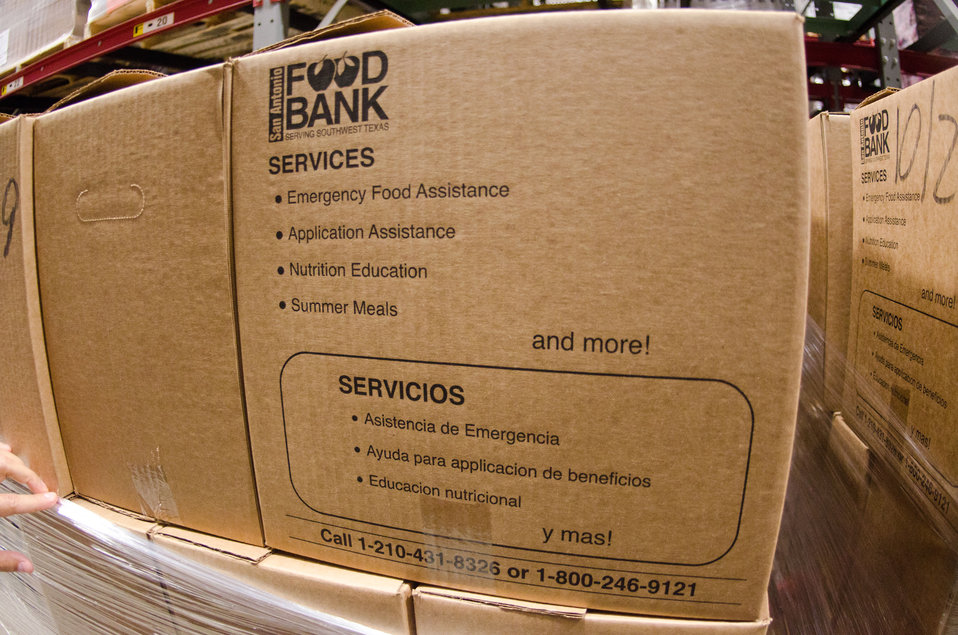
The United States Department of Agriculture donates commodities through programs such as The Emergency Food Assistance Program (TEFAP), which the San Antonio Food Bank (SAFB) packages and palletizes them for fast distribution from its San Antonio, TX., headquarters, on Monday, October 31, 2011. These boxes feature bilingual listing of critical services and contact information for people in emergency situations. SAFB is a non-profit organization that serves as a clearinghouse by receiving and storing truckloads of donated food, produce, and other grocery products, they then distributes these items to over 500 service agencies that help people in need.
“We couldn’t do what we do without our partnership with USDA’” said President and CEO Eric Cooper. He continues, “We are privileged in partnering (with the USDA) to feeding kids, through the summer, with the Summer Food Service Program, and throughout the year, with the Child and Adult Care Feeding Program (CACFP). Then in our approach to feeding seniors, we partner with USDA in the Commodities Supplemental Food Program (CSFP), and the Senior Farmer’s Market (Nutrition) Program. And then work to bring all our (needy) parties together with our Supplemental Nutrition Assistance Program (SNAP) Outreach. You know, once families have access to food we believe it is important to educate them. Through the support of the SNAP-Education Program we are able to educate them during their time of need. With this comprehensive approach we are really able to get the right food, at the right amount, at the right time, to needy families throughout our community – which allows us to feed the fifty-eight thousand we do, each week.”
SAFB serves 16 counties in Southwest Texas and states, “Nearly one out of every four children and one out of every five adults in Southwest Texas lives in poverty and has difficulty meeting basic nutritional needs.” According to SAFB, sixty-five percent of the people requesting emergency food have children. “Additionally, the senior citizens and those living on a fixed income generally have limited funds for a consistent grocery budget.”
San Antonio is the seventh largest city in the nation with surrounding farms and ranches near its rivers and water supplies. When available they provide fresh surplus produce. Other commodities come from the food industry and manufacturers. The major food brand companies that for various reasons have surplus commodities donate it to SAFB.
Texas farmers supply fresh produce to their Fresh Produce Program.
Public donations come in the form of money, food, volunteer time, and advocacy.
Their fleet of trucks pickup and deliver food as needed.